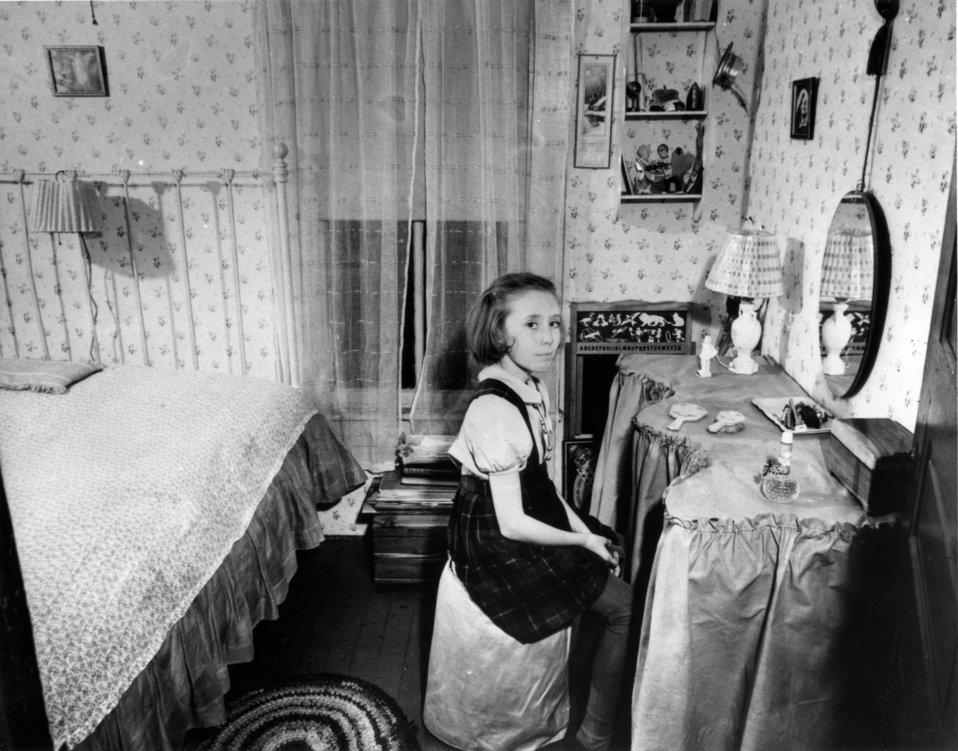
Early settlers at Oak Ridge